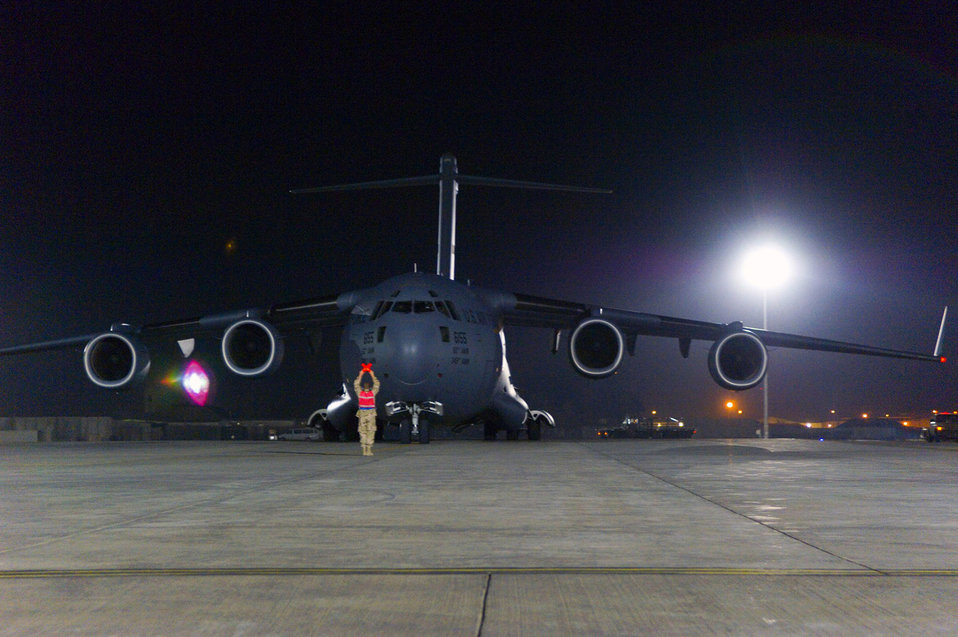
Balad aerial port bests cargo movement record

A crew chief marshals in a C-17 Globemaster III for download on the flightline Dec. 8 at Balad Air Base, Iraq. The C-17 crew was delivering three new mine resistant ambush protected vehicle for the Army. C-17 aircraft were among the airframes downloaded when aerial port team members broke the single-day cargo-movement record here Dec. 6 by moving more than 400 tons of cargo.